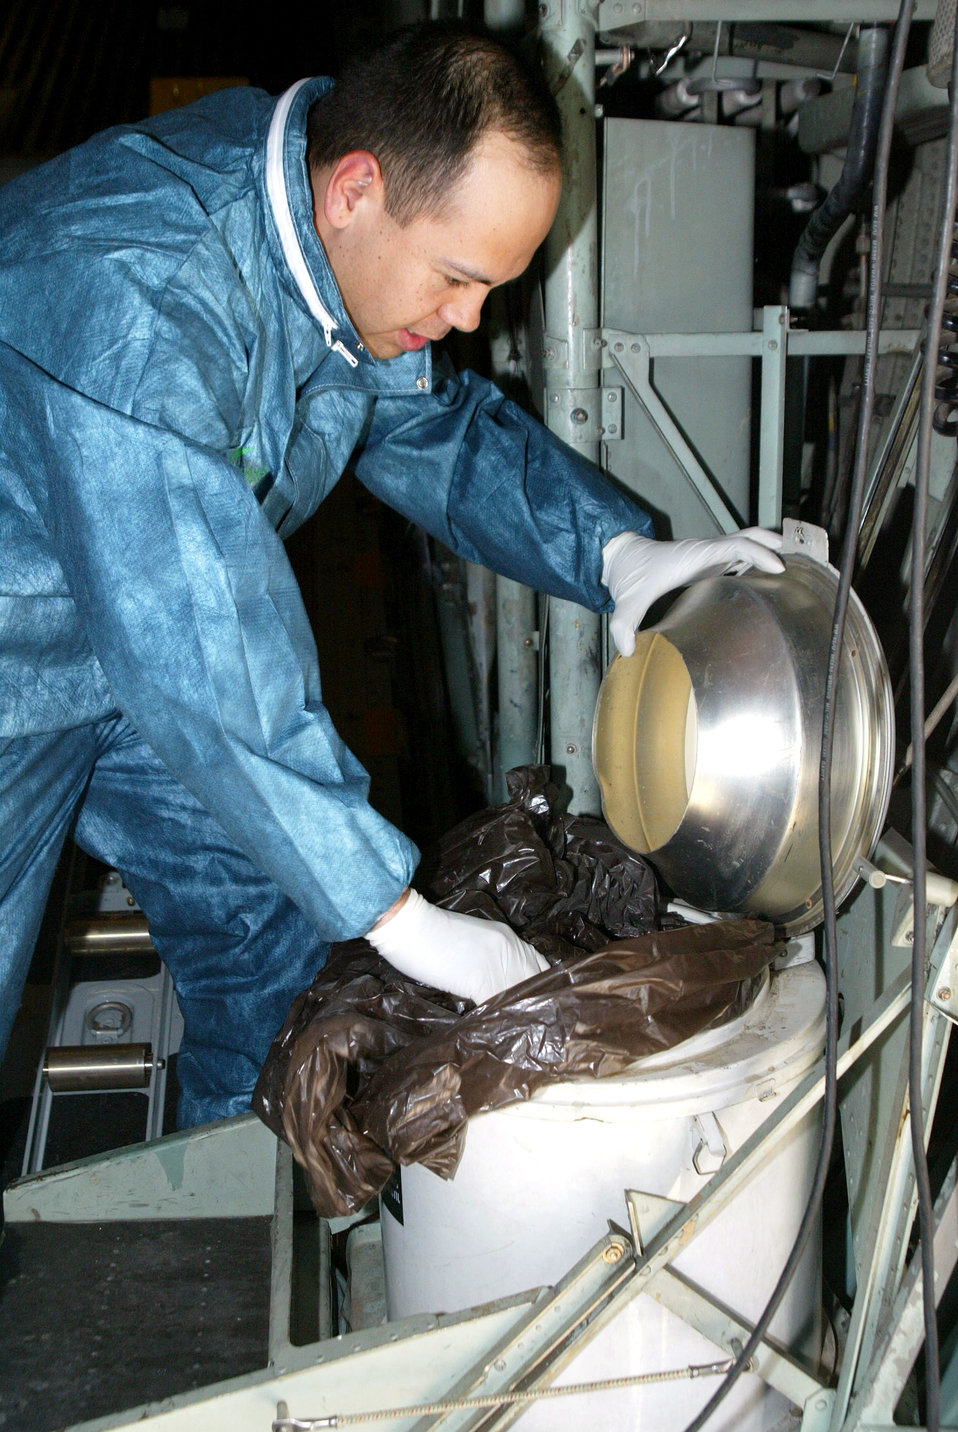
Dirty job

Airman 1st Class Jaime Quinones changes the